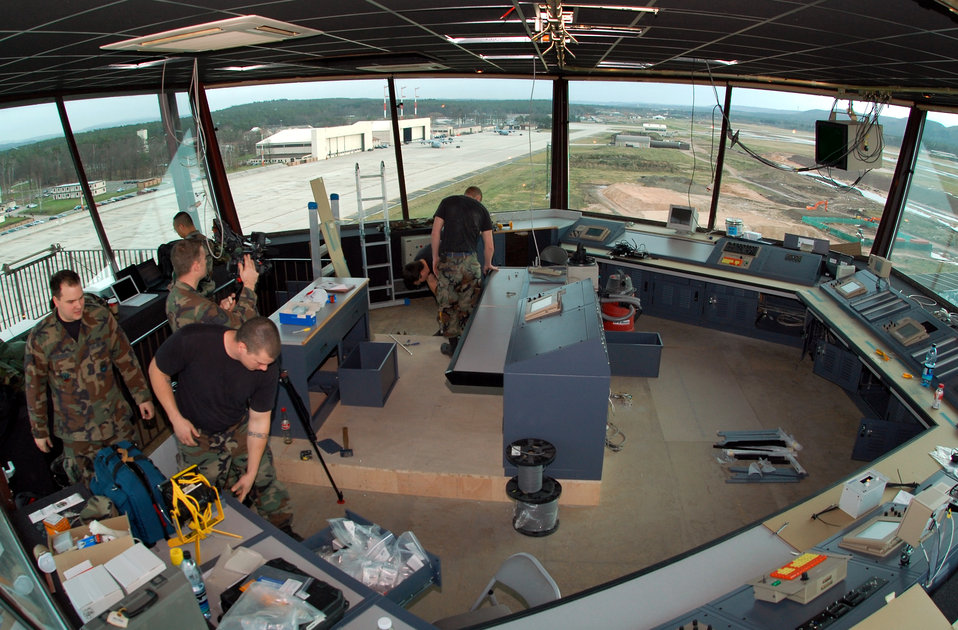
Ramstein tower renovations on schedule

The air traffic control tower at Ramstein Air Base, Germany, is in a state of transition as it undergoes approximately $300,000 worth of upgrades. Work is progressing on time and within budget. The tower staff expects to be fully operational in the